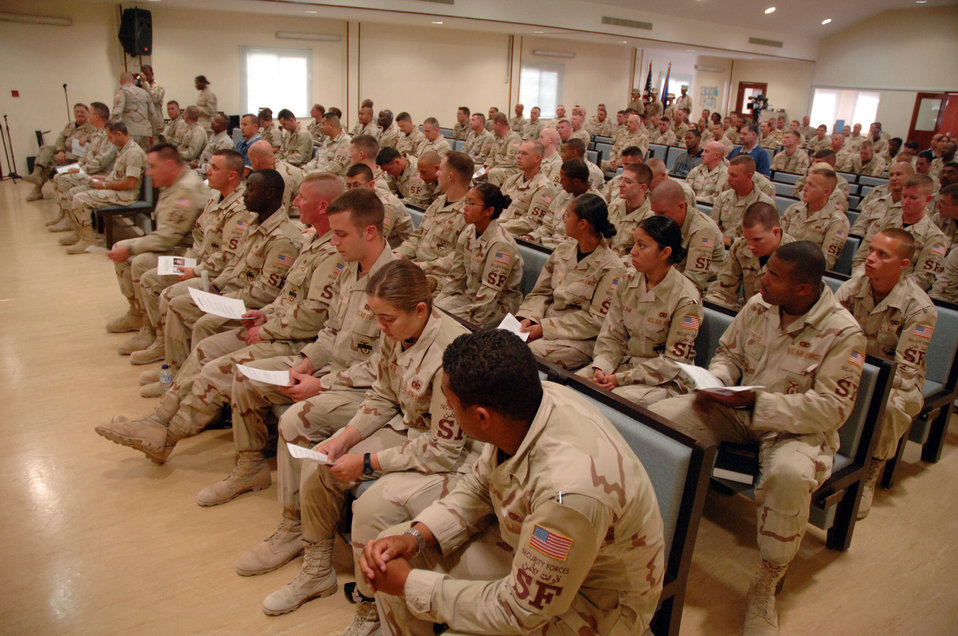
Final salute

SOUTHWEST ASIA (AFPN) -- More than 200 people attended a memorial service at a deployed location in Southwest Asia for the two security forces Airmen killed in Iraq Jan. 22. In attendance were 40 other deployed members from Elmendorf Air Force Base, Alaska, home station of the fallen service members -- Tech. Sgt. Jason L. Norton and Staff Sgt. Brian McElroy. Joining Airmen from the 379th Air Expeditionary Wing were British and Australian troops who came to pay their respects.